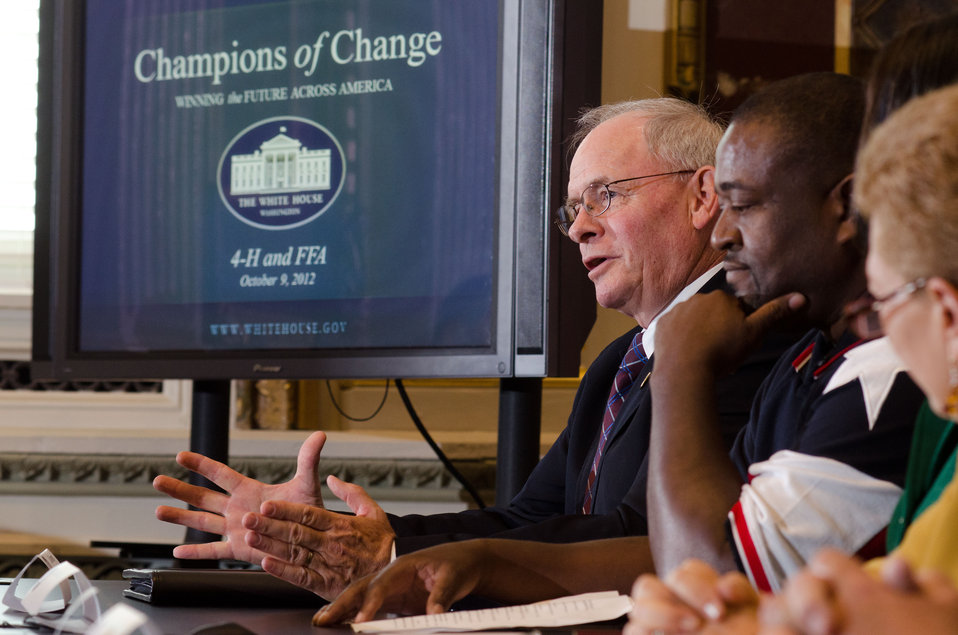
Montana FFA American Indian Program creator Bill Jimmerson speaks at the Champions of Change Recognition event in the Indian Treaty Room at the Executive Office Building in Washington, D.C. on Tuesday, Oct. 9, 2012. The Champions of Change program was created to honor ordinary Americans doing great work in their communities. Each week, a different sector is highlighted and groups of Champions, ranging from educators to entrepreneurs to community leaders, are recognized for the work they are doing to serve and strengthen their communities.